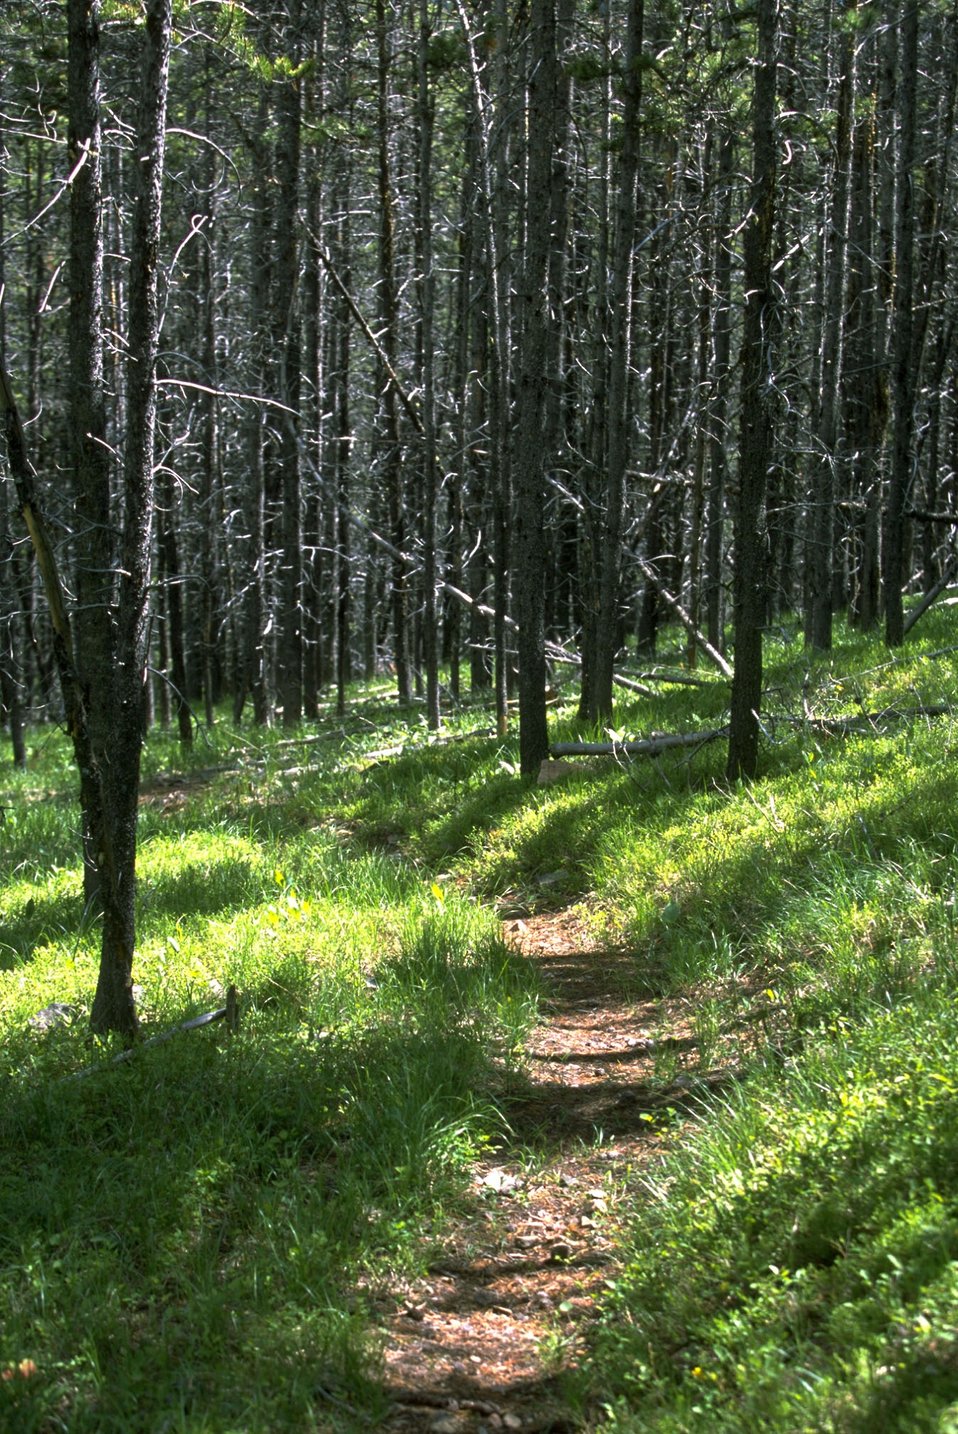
Hiking and game trail in the Judith Mountains